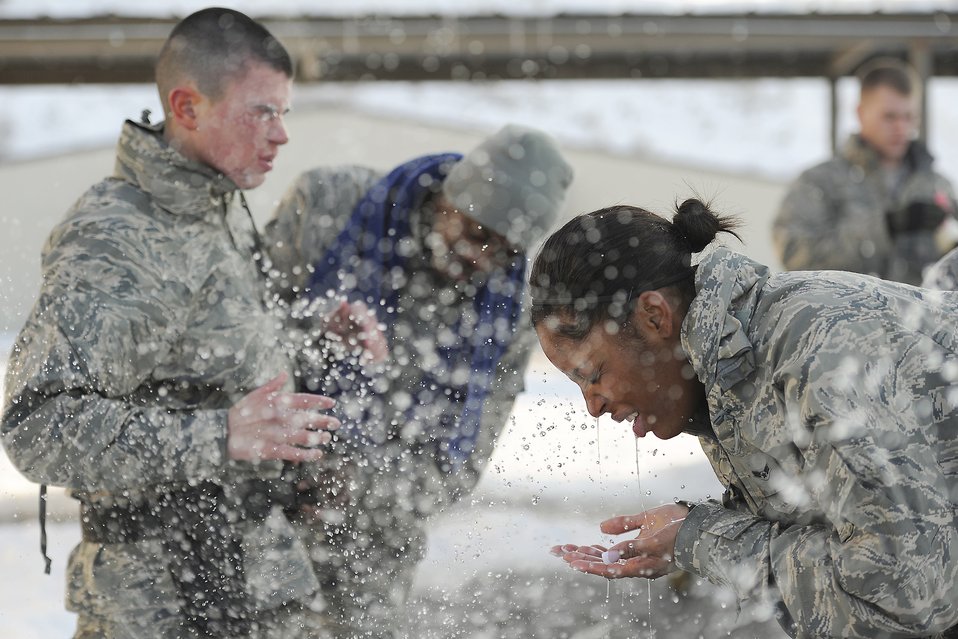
Oleoresin Capsicum spray training

Airman 1st Class Chanelle Clayton rinses Oleoresin Capsicum spray from her eyes Jan. 5, 2011, at Hill Air Force Base, Utah. OC spray is a non-lethal spray, similar to pepper spray, used to temporarily incapacitate individuals. All security forces Airmen receive the OC training when they first arrive at their squadron. Airman Clayton is assigned to the 75th Security Forces Squadron.